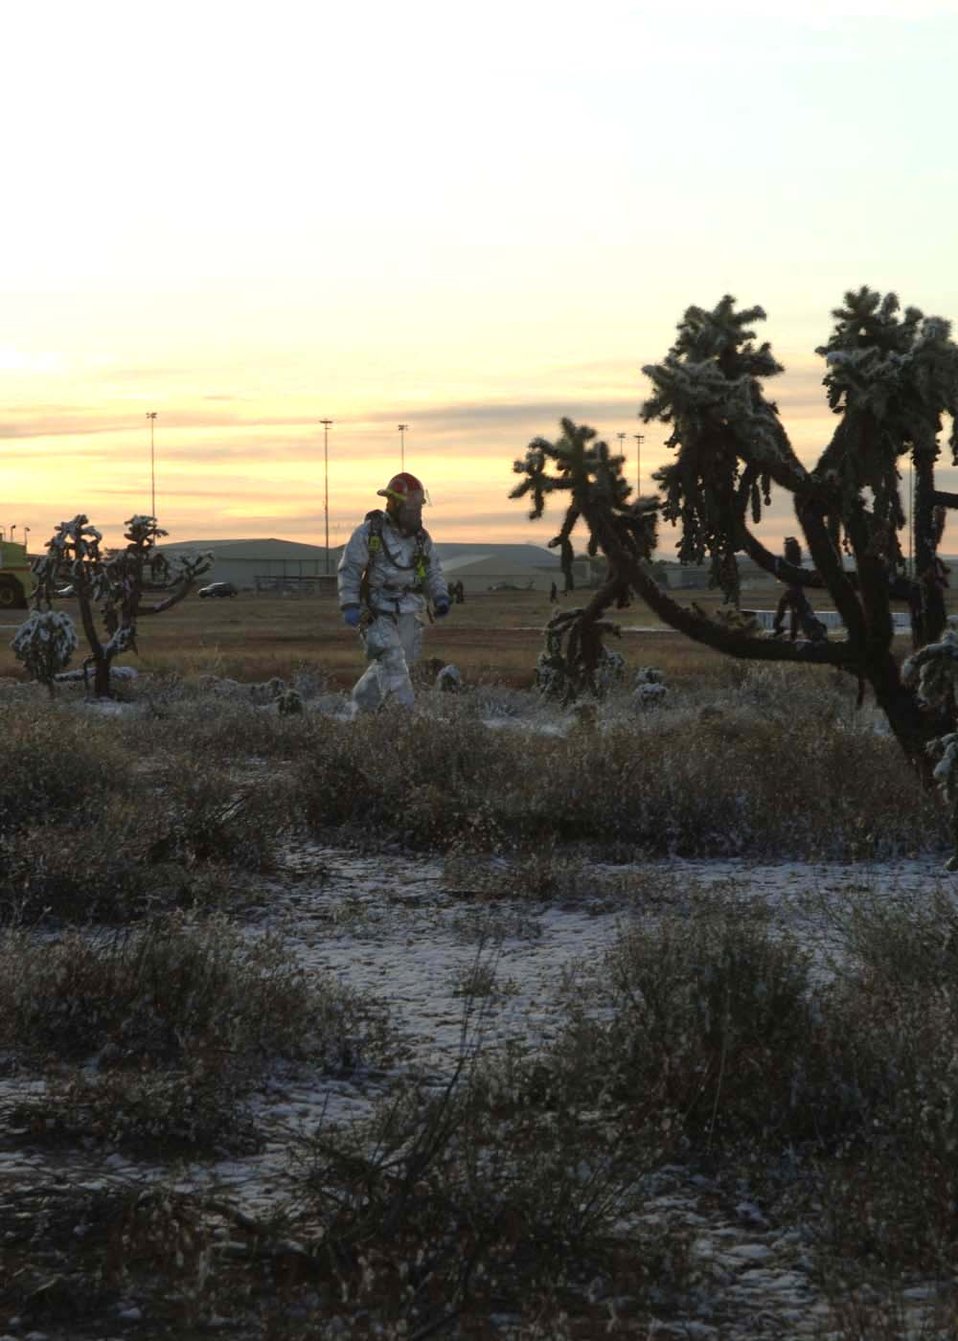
Training to fight fires together

A Davis-Monthan Air Force Base firefighter searches the simulated aircraft accident scene for survivors Dec. 4 at Davis-Monthan AFB, Ariz. Exercise Vigilant Shield 07 is a joint Department of Defense and federal nuclear weapon accident exercise. The exercise scenario involved a C-17 Globemaster III carrying four nuclear weapons to be diverted to Davis-Monthan AFB due to simulated engine failure that caused an aircraft accident. Davis-Monthan firefighters, the Tucson Fire Department, Tucson Police Department, and many different agencies ranging form local to national levels responded to the simulated scene.